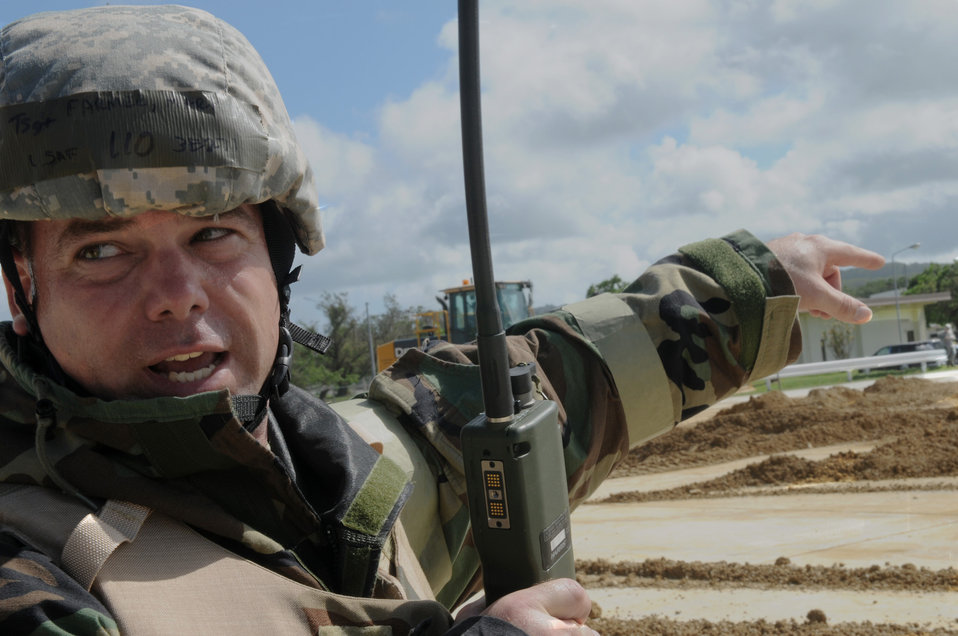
Silver Flag

Tech. Sgt. Mark Farmer directs a forklift June 28, 2011, during Silver Flag at Kadena Air Base, Japan. Sergeant Farmer is a pavement and heavy-equipment operator assigned to the 647th Civil Engineer Squadron at Joint Base Pearl Harbor-Hickam, Hawaii.